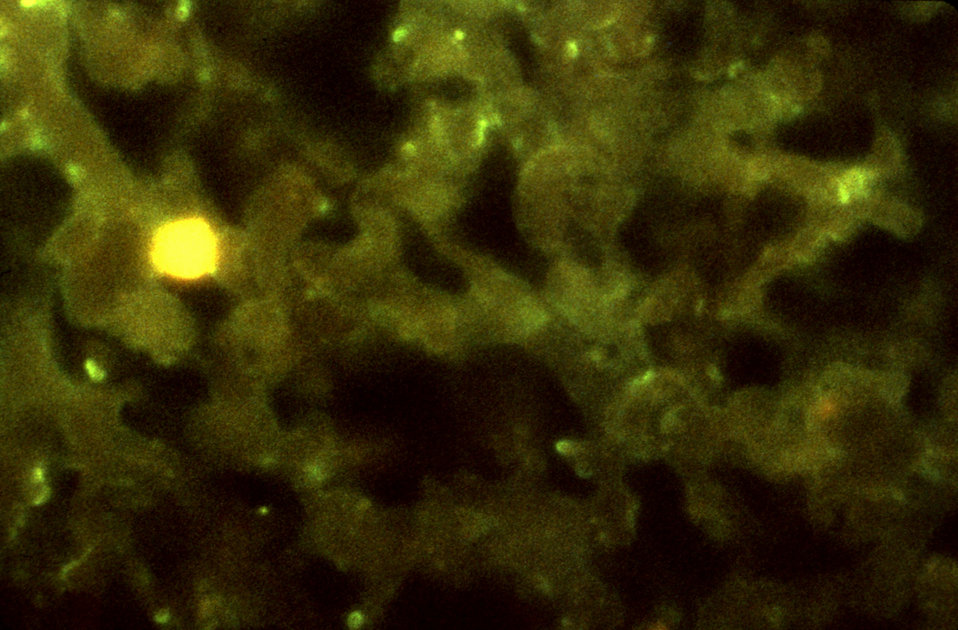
Magnified 400X, this micrograph depicted details displayed by a specimen consisting of lung tissue from a Knoxville patient with a fatal pneumonia due to Legionnaires' disease. A fluorescent antibody stain was implemented consisting of the Knoxville strain conjugate, i.e., an antibody with an affinity to L. pneumophila bacterial antgen, and a fluorochrome, which is a fluorescent dye, e.g. fluorescein isothiocyanate. The presence of the Legionella bacteria was evidenced when the antibody-dye complex became bound to serum antigen circulating throughout the patient due to the presence of the pathogen. Subsequently, when the antibody conjugate-antigen complex was exposed to light it produced a fluorescent effect.